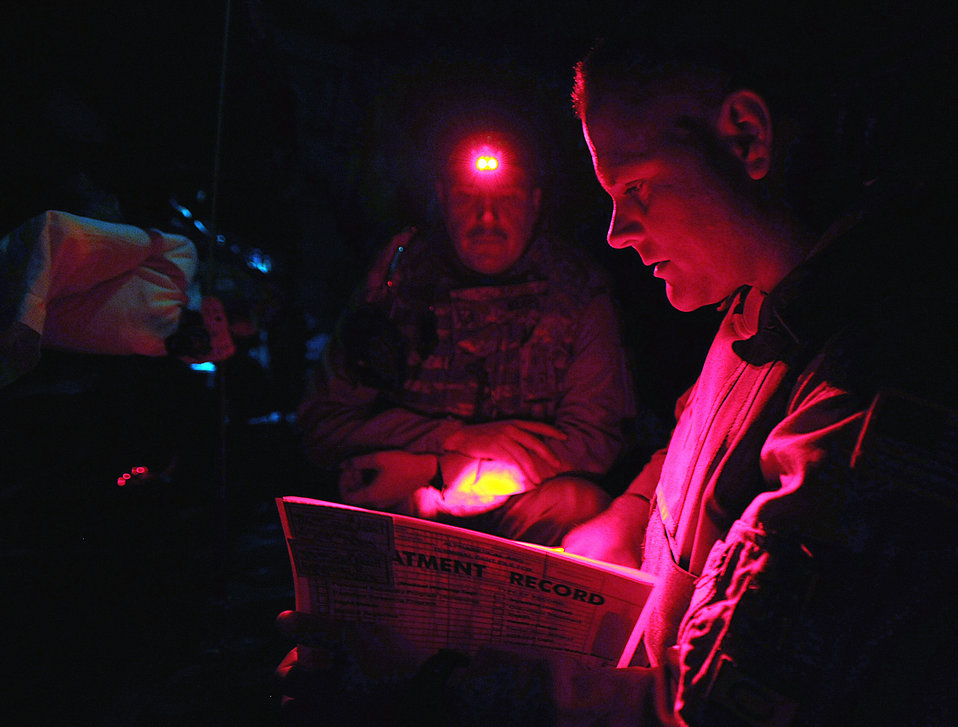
Iraqi doctors study American aeromedical evacuation program

Capt. James Ryan checks patient records with light from Master Sgt. Scott Wilkes' head lamp during an aeromedical evacuation mission over Iraq Nov. 7. Two Iraqi doctors from Iraq's Ministry of Defense accompanied the Air Force mission to study aeromedical evacuation procedures so that they can establish an aeromedical evacuation service for the Iraqi air force. Captain Ryan, a flight nurse with the 332nd Expeditionary Aeromedical Evacuation Flight, is deployed from McChord Air Force Base, Wash. Sergeant Wilkes, a medical technician with the 332nd EAEF, is deployed from McGuire AFB, N.J.